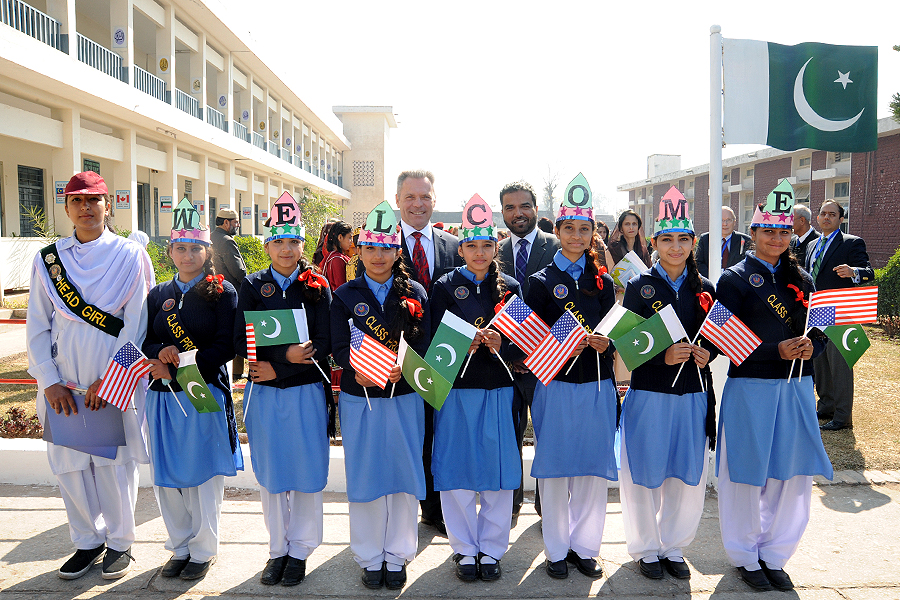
United States and Pakistan Launch the Pakistan Reading Project